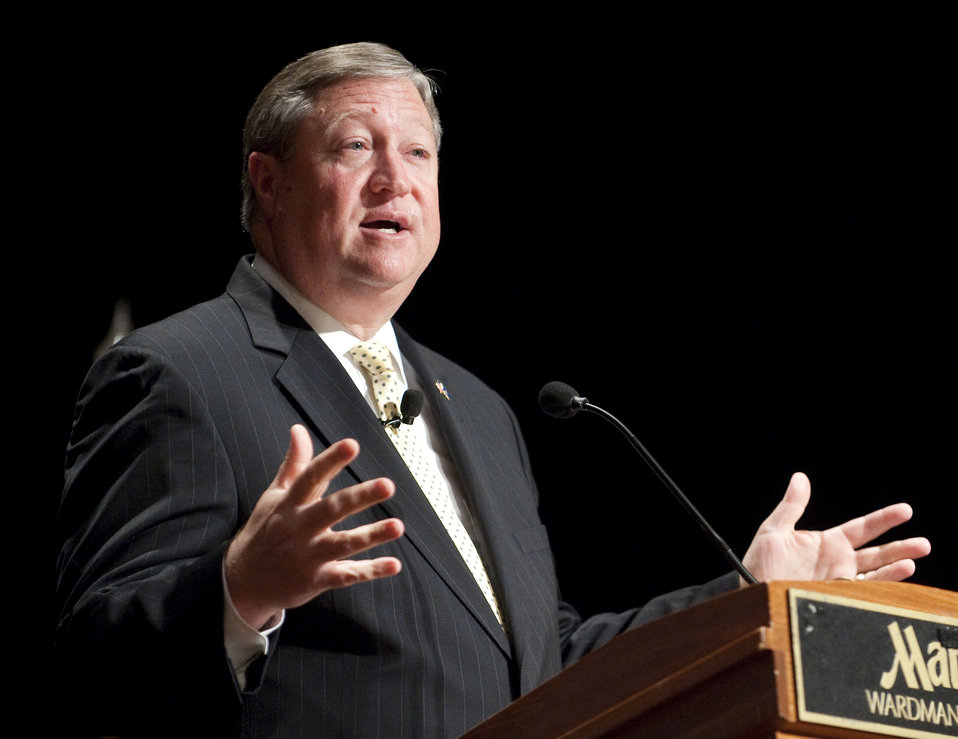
Air Force Reserve Command Senior Leader Conference

Secretary of the Air Force Michael Donley addresses Air Force Reserve Command senior leaders May 16, 2011, during their annual conference in Washington, D.C.